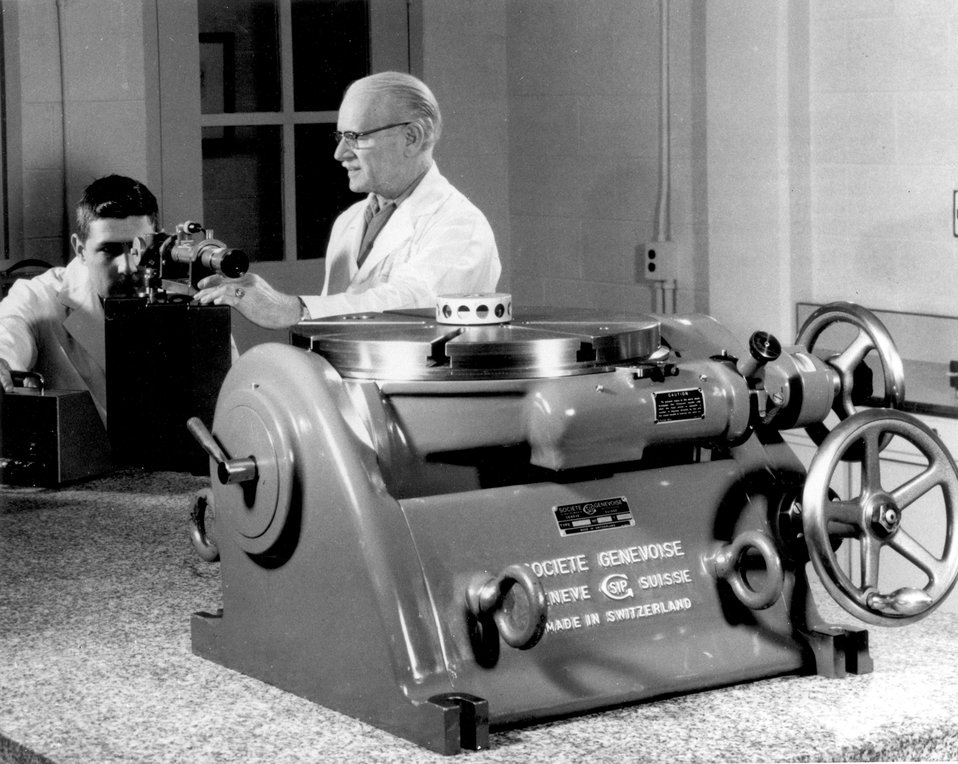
Approximately 25 apprentices are trained each year in Oak Ridge National Laboratory shops. Many of the finest craftsmen at the Laboratory received their training in this apprentice school. c. 1967